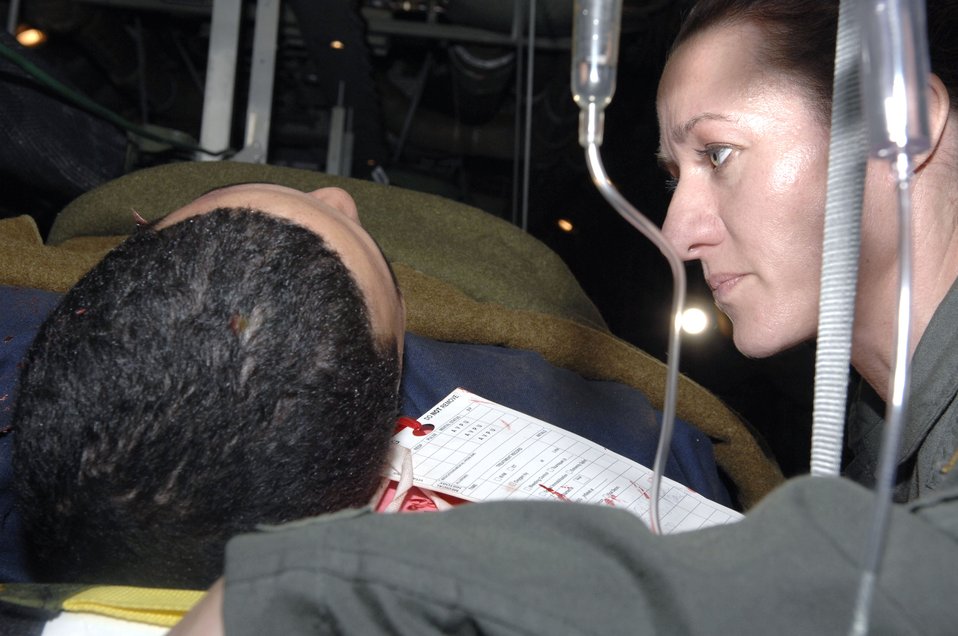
CMAX/Collaborative Multi-Agency Exercise

Lt. Dinah Lewis reassures Airman 1st Class Justin Vargas, a